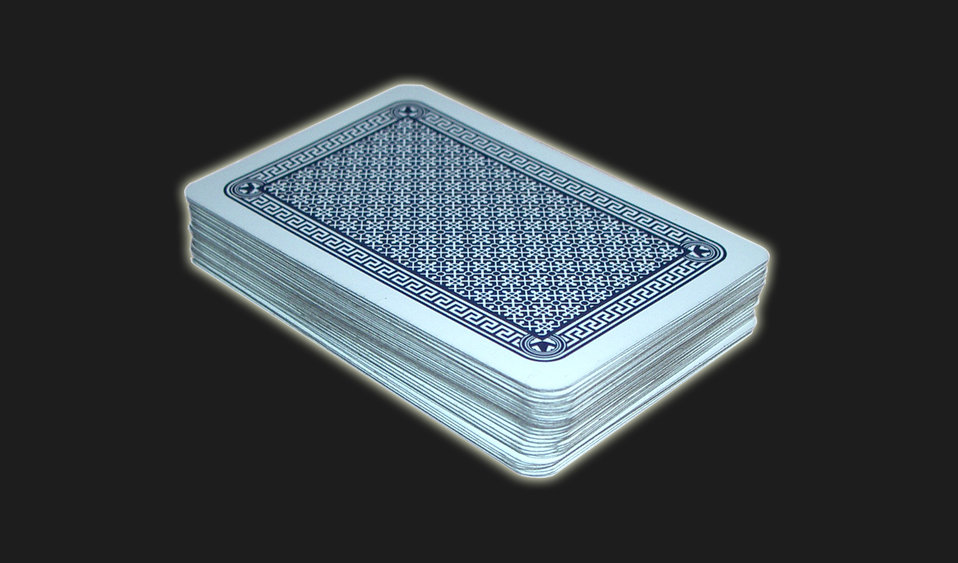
Pack of playing cards.